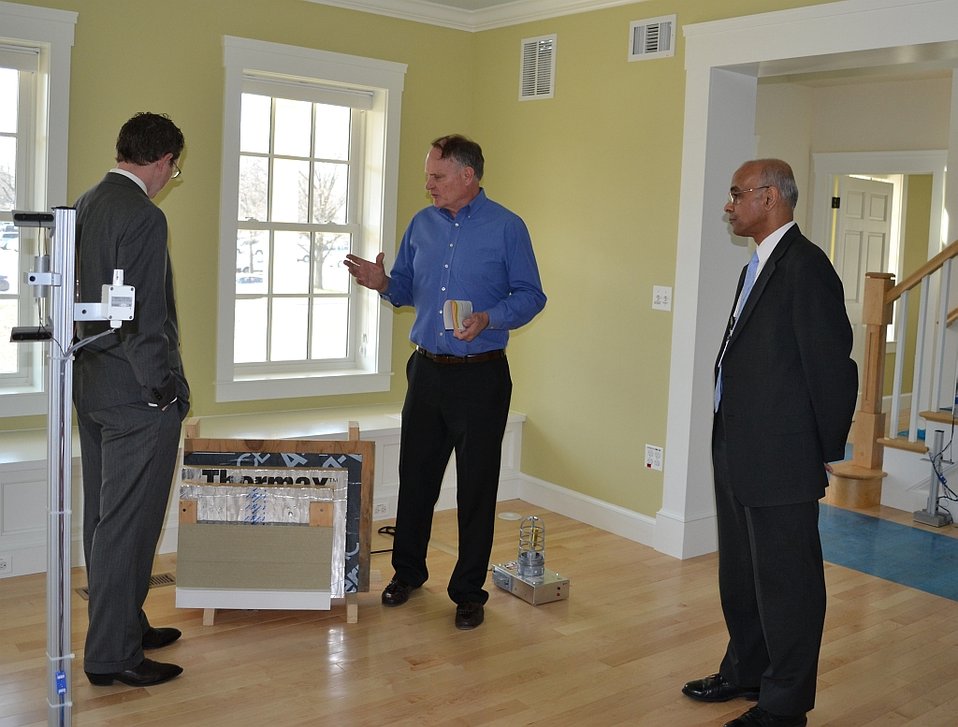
Representative Massie Tour #4

Dr. Hunter Fanney [center] & Dr. S. Shyam Sunder [right] of NIST’s Engineering Laboratory describe the insulation properties of the Net-Zero Energy Residential Test Facility to U.S. Representative Thomas Massie (R. KY) [left].